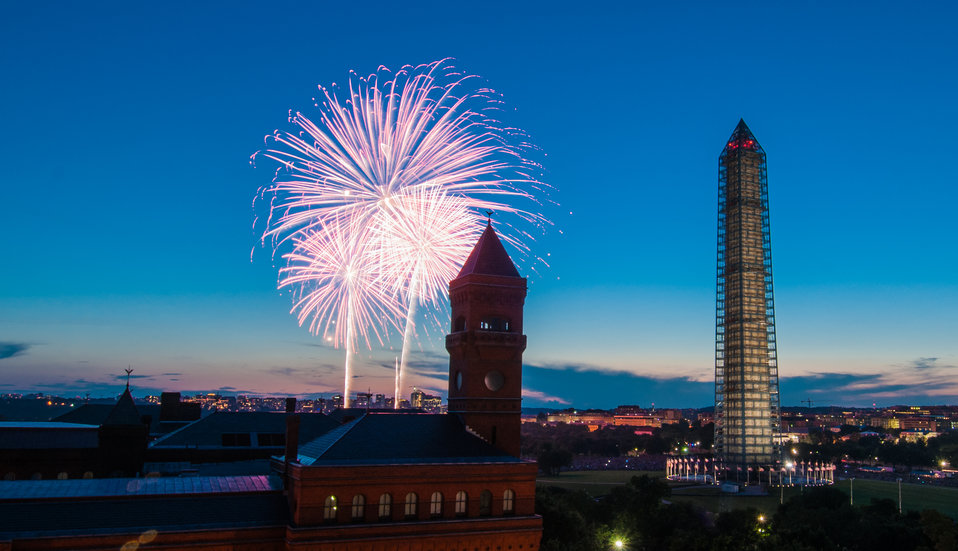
4th of July fireworks as seen from the U.S. Department of Agriculture (USDA) headquarters building, with the USDA Forest Service Yates Building in the foreground, left, and the Washington Monument in Washington, D.C., on July 4, 2013.